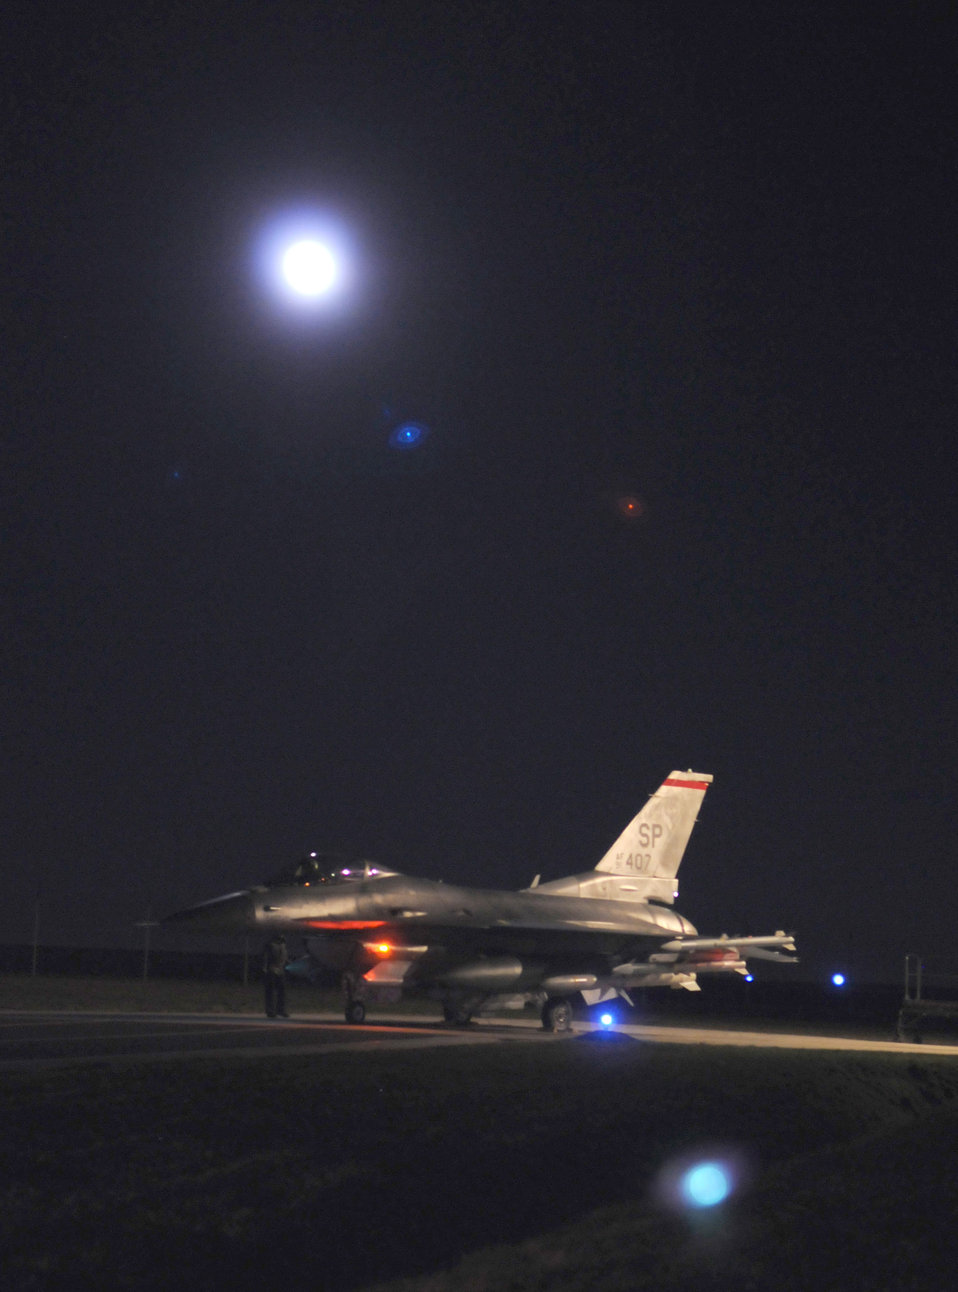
Operation Odyssey Dawn

SPANGDAHLEM AIR BASE, Germany ? An F-16 Fighting Falcon from the 480th Fighter Squadron prepares for take-off from Spangdahlem Air Base in support of Operation Odyssey Dawn March 19. Joint Task Force Odyssey Dawn is the U.S. Africa Command task force established to provide operational and tactical command and control of U.S. military forces supporting the international response to the unrest in Libya and enforcement of United Nations Security Council Resolution (UNSCR) 1973. UNSCR 1973 authorizes all necessary measures to protect civilians in Libya under threat of attack by Qadhafi regime forces. JTF Odyssey Dawn is commanded by U.S. Navy Admiral Samuel J. Locklear, III.